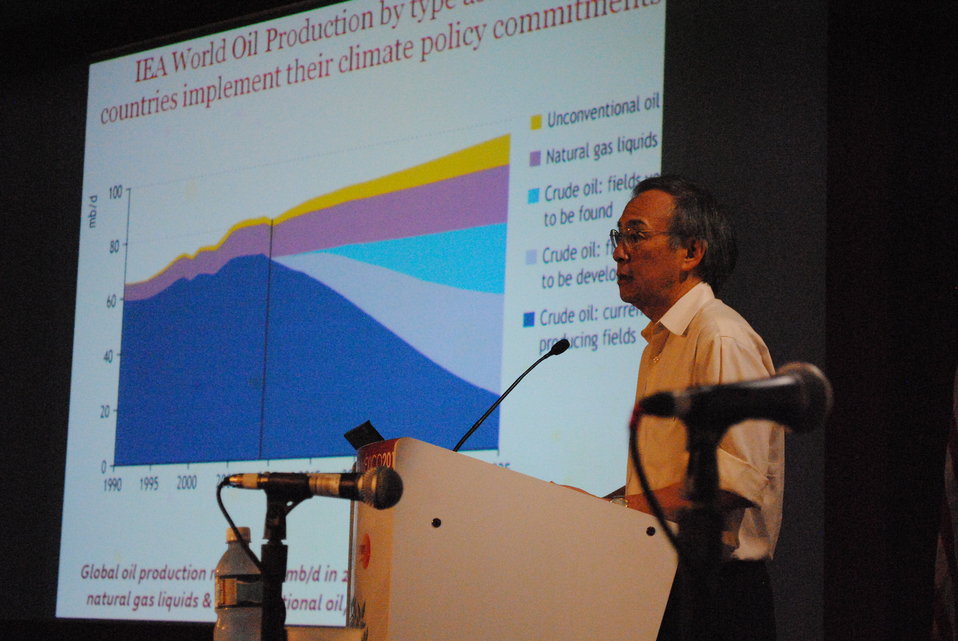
Secretary Chu Addresses the U.S. Center

U.S. Secretary of Energy Steven Chu addresses the U.S. Center at COP-16 in Cancun, Mexico, on December 6, 2010.